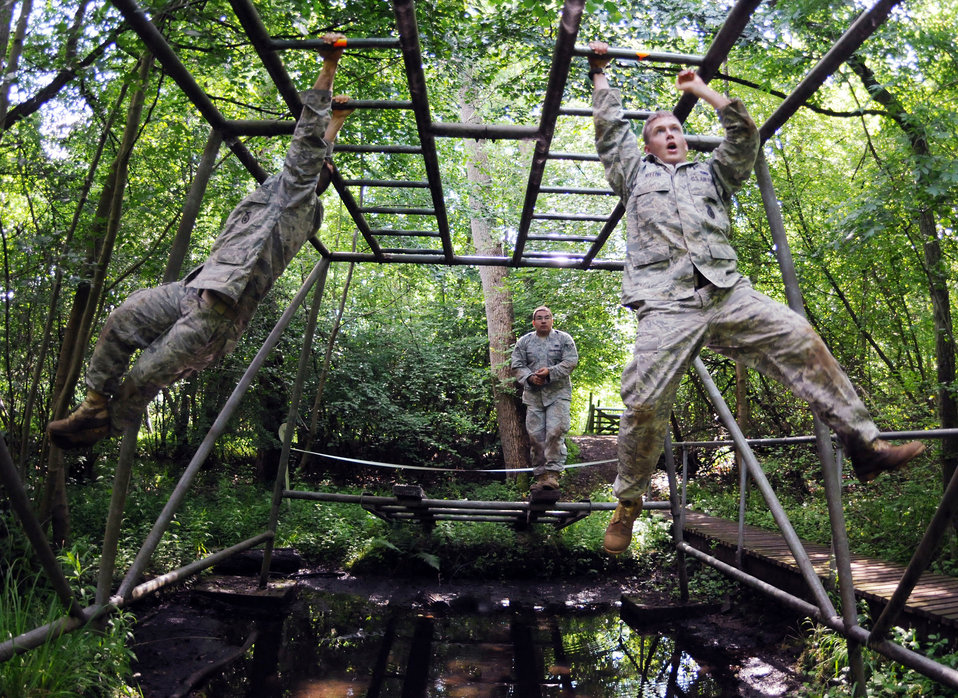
Yo, here's my Tarzan move!

A group of Airmen from the 100th Security Forces Squadron swing over a muddy pit on monkey bars at Royal Air Force Mildenhall, England, while training for the 2009 Air Mobility Rodeo competition. A team of five Airmen from the 100th SFS trained for about 10 weeks to prepare for the biennial event.